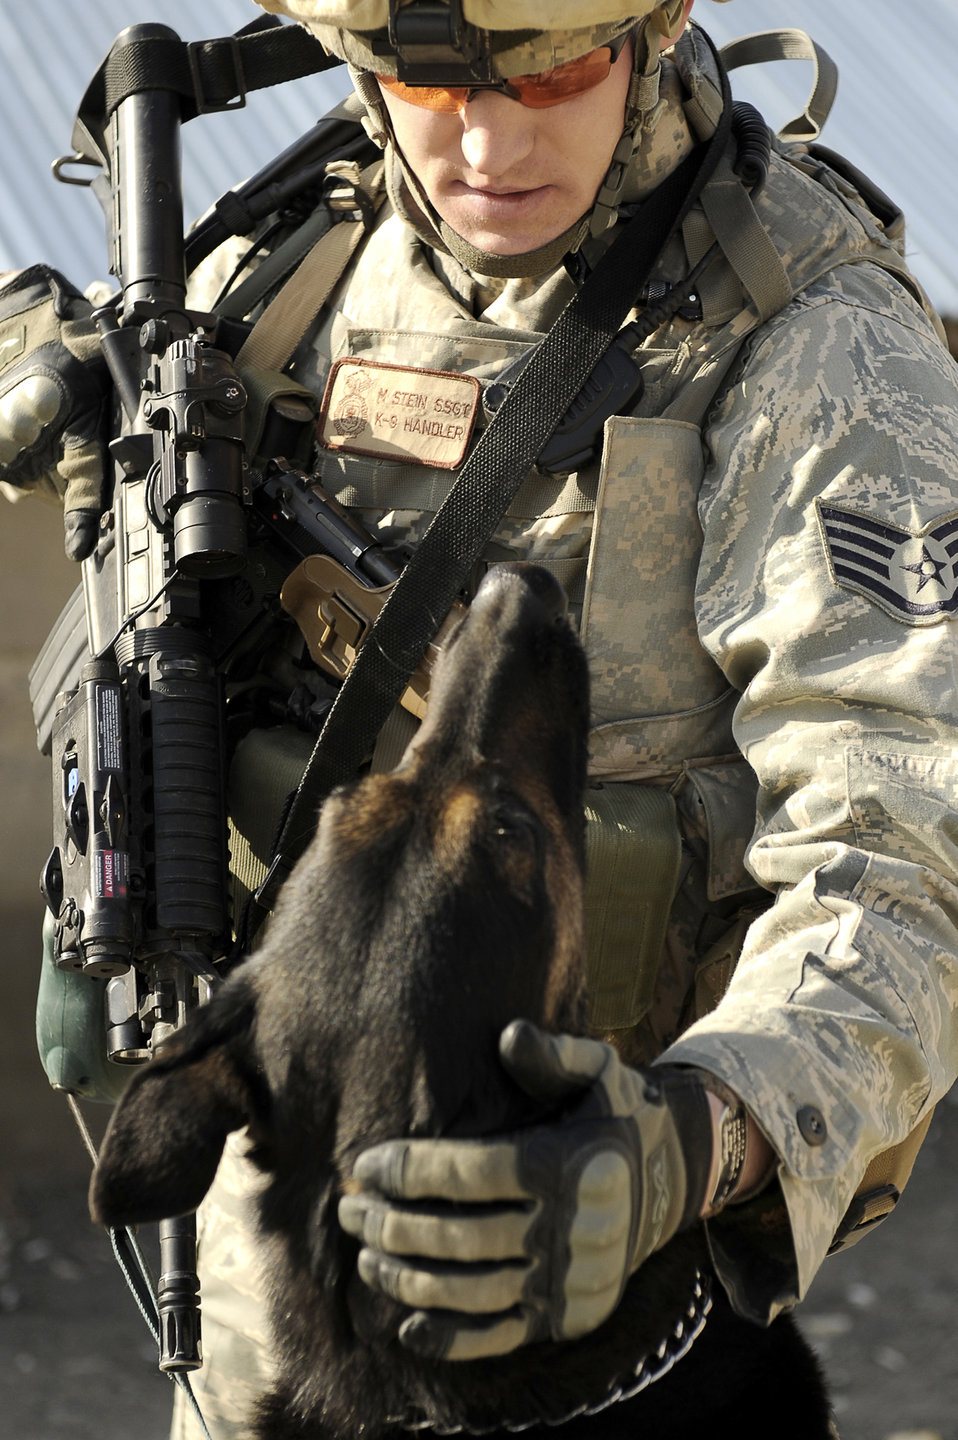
It's a dog's life at Bagram

Staff Sgt. Mitchell Stein and Artus, his military working dog, take a break from their patrol Feb. 2, 2010, on Bagram Airfield, Afghanistan. Sergeant Stein is assigned to the 455th Expeditionary Security Forces Squadron, and from Crescent City, Ill. He and Artus are deployed from Spangdahlem Air Base, Germany.